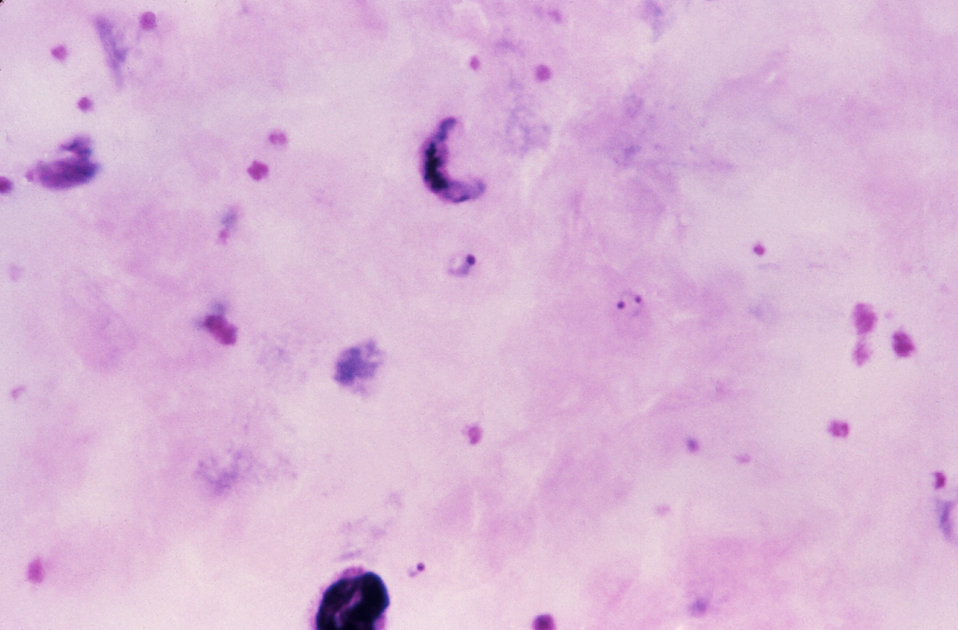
This thick film Giemsa stained micrograph reveals a Plasmodium falciparum gametocyte (Cntr), and ring-form trophozoites.